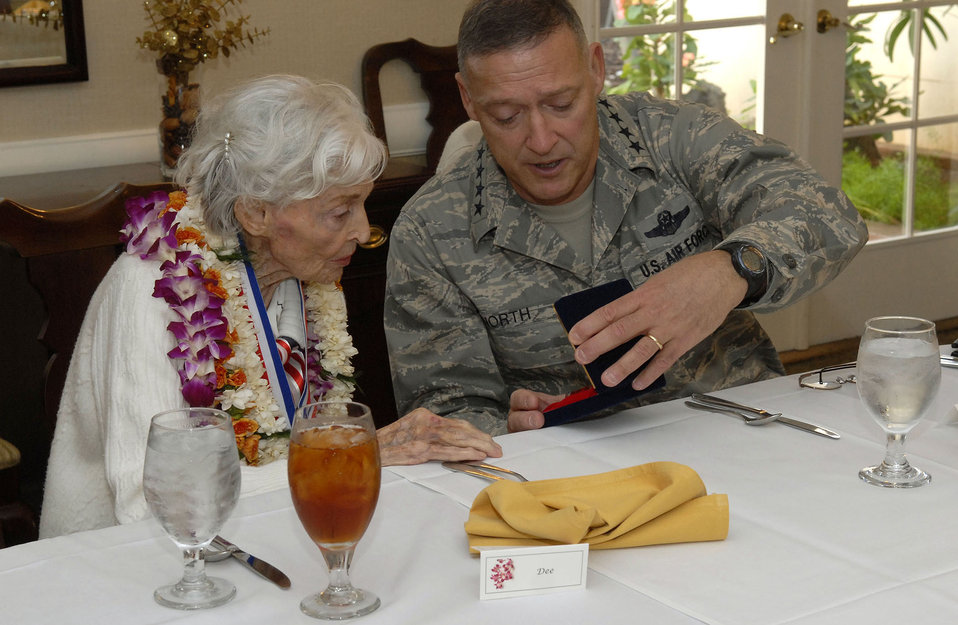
PACAF commander presents medallion to World War II nurse

Gen. Gary North presents a gift to Doris Avery at a luncheon in her honor Feb. 5, 2010, at Joint Base Pearl Harbor Hickam, Hawaii. General North is the Pacific Air Forces commander.